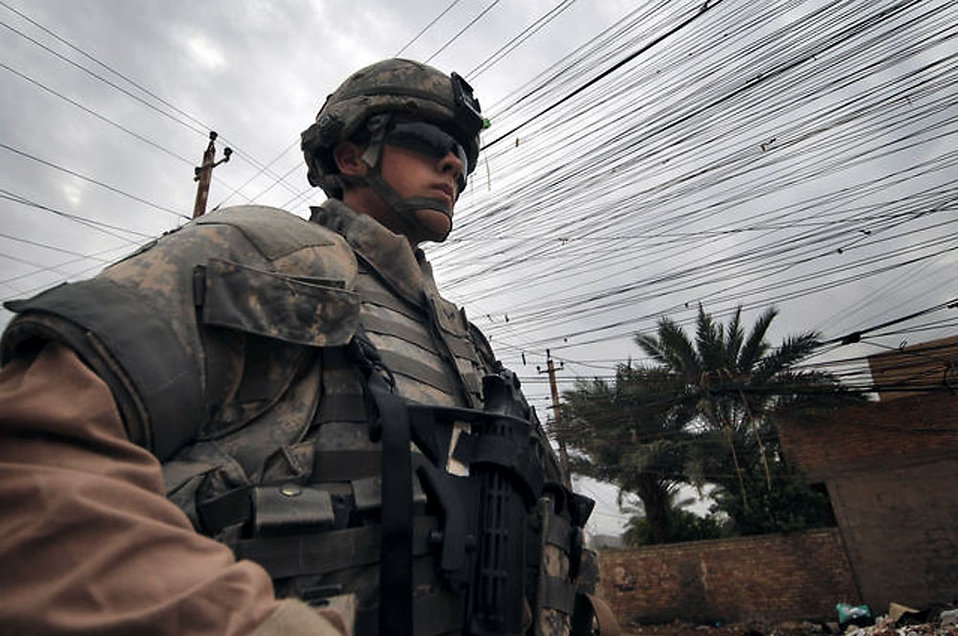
A watchful eye

Airman 1st Class Justin Iverson patrols the Doura district of Baghdad, Iraq, Nov. 22. He is assigned to Detachment 3, 732nd Expeditionary Security Forces Squadron, attached to the U.S. Army's 1st Brigade Combat Team, 4th Infantry Division.